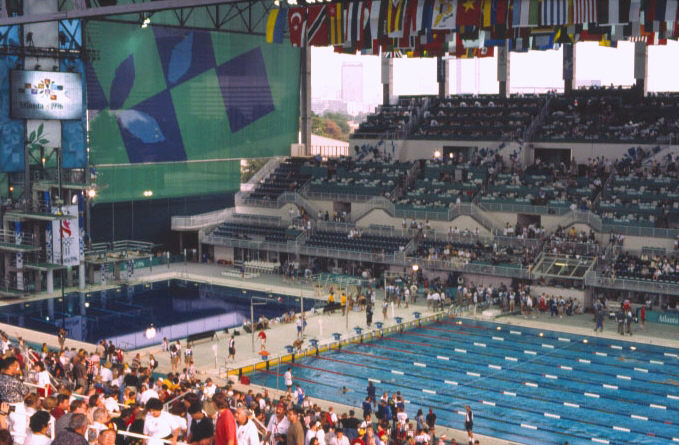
1996 Atlanta Olympics--swimming venue.